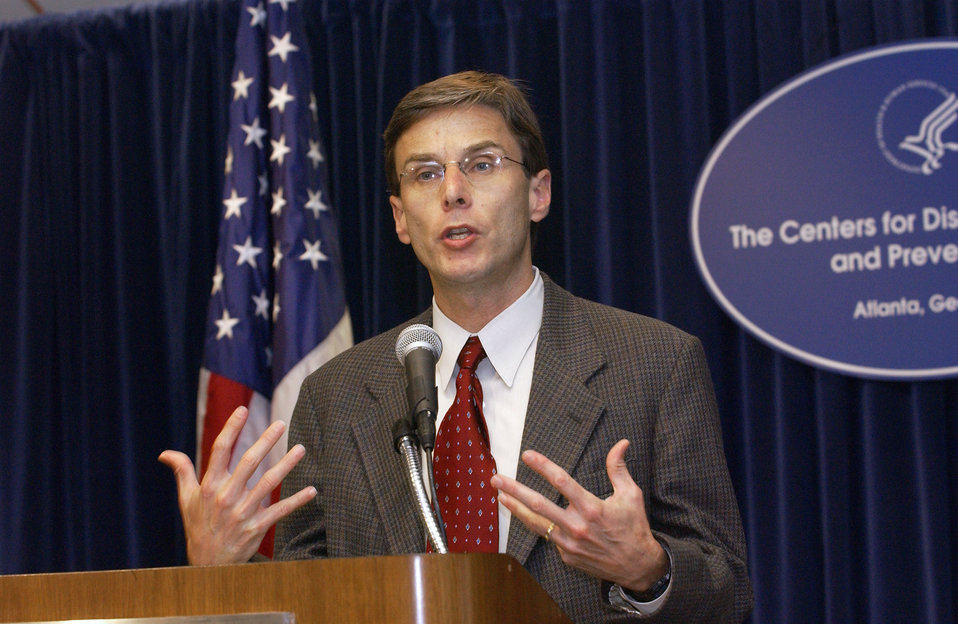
This was a Monkeypox Update press briefing presented by Dr. David Fleming, June 11, 2003.